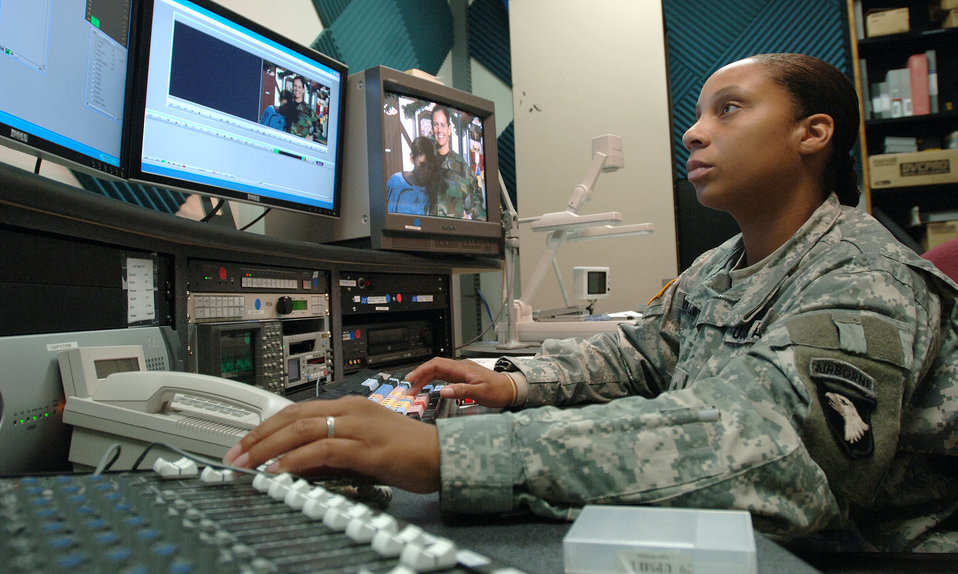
Holiday greetings program producing more than 7,000 'Hi moms'

Army Sgt. Kimberly M. Williams edits a holiday greeting Oct. 30 at the Air Force News Agency in San Antonio. Army and Air Force Hometown News